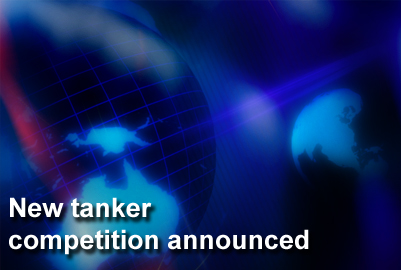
New tanker competition announced

Air Force leaders are seeking a replacement for the KC-135 Stratotanker and have rolled out an acquisition plan that favors